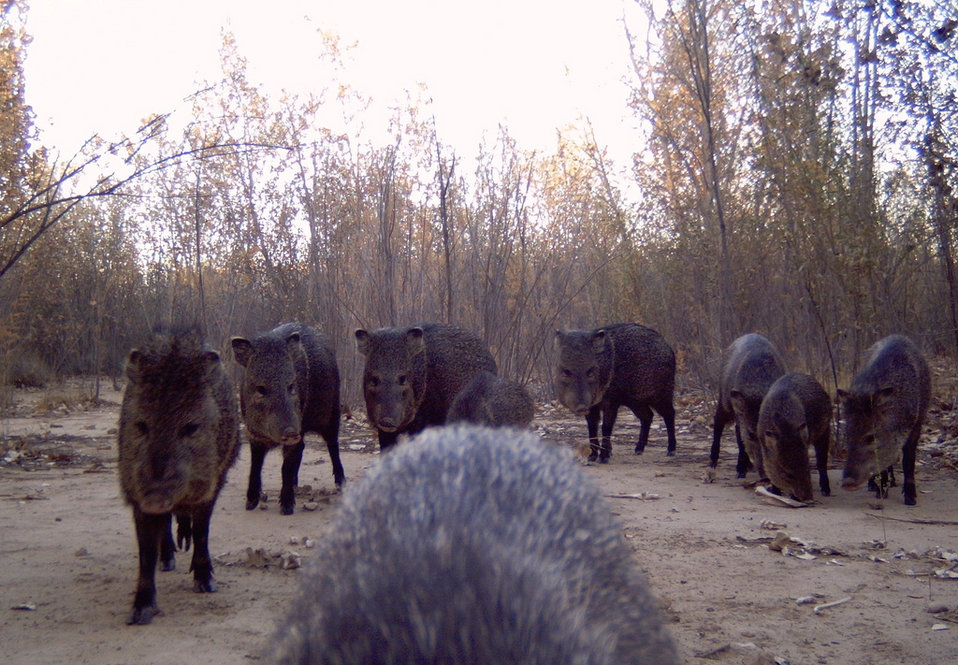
javelinas

Bosque del Apache National Wildlife Refuge, NM
Camera trap project by Matt Farley, Jennifer Miyashiro, and J.N. Stuart.